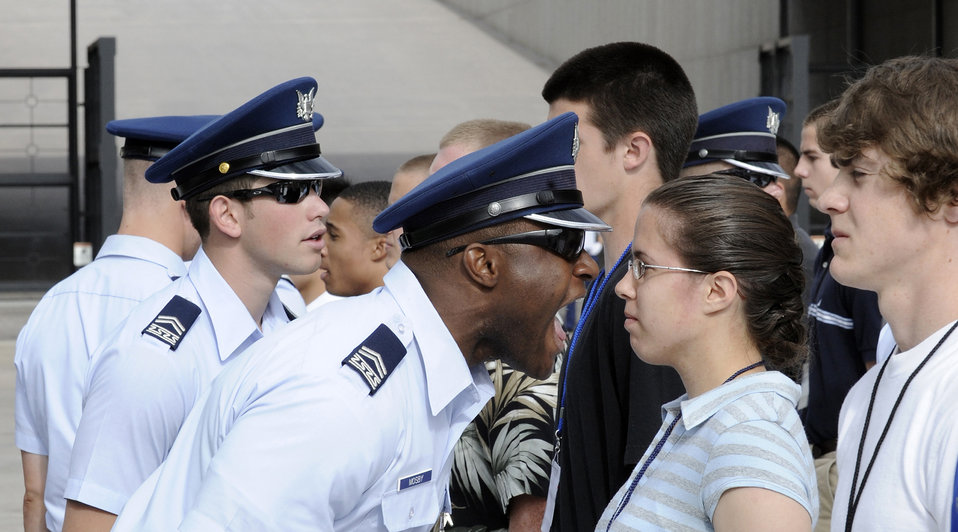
Welcome to the Air Force Academy!

Cadet 2nd Class Mark Mosby ensures new basic cadets follow cadre instructions during cadet inprocessing June 25 at the U.S. Air Force Academy in Colorado Springs, Colo. Approximately 1,400 cadets were selected for the Class of 2013 out of nearly 10,000 applicants.